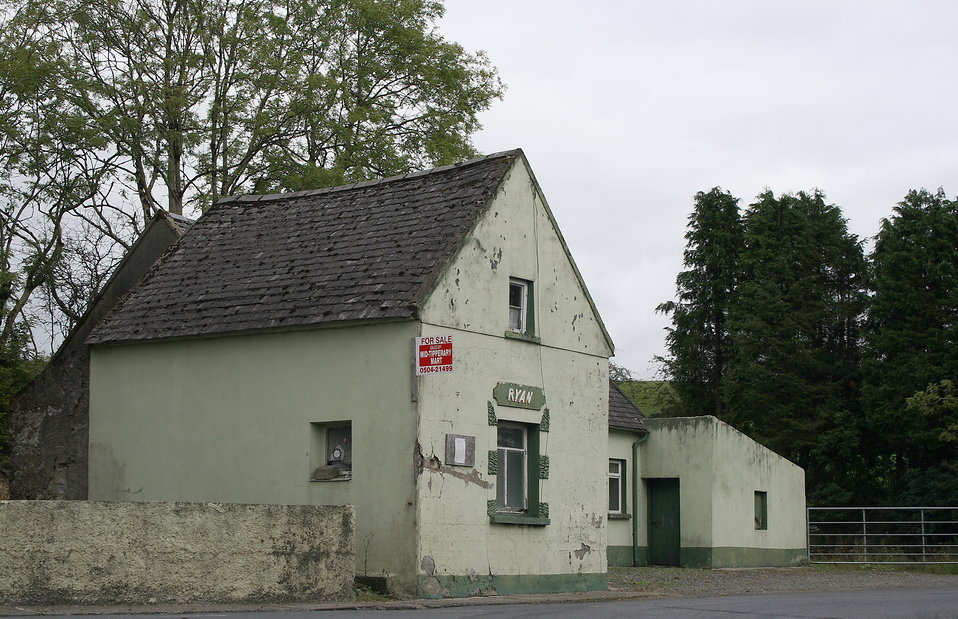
Closed-down rural pub at Milestone, County Tipperary, Ireland